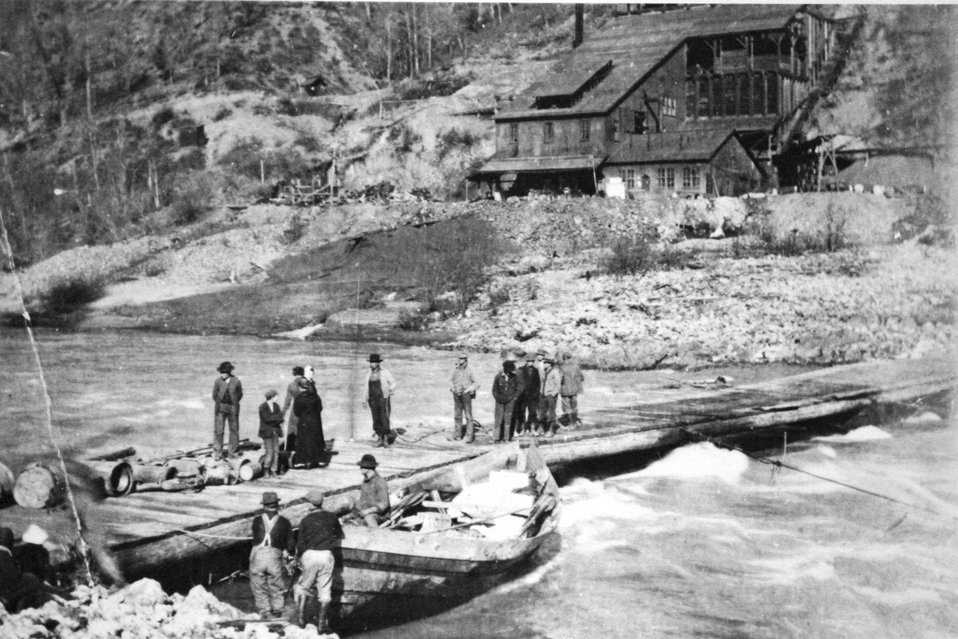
Almeda mine C. 1910 - 1911